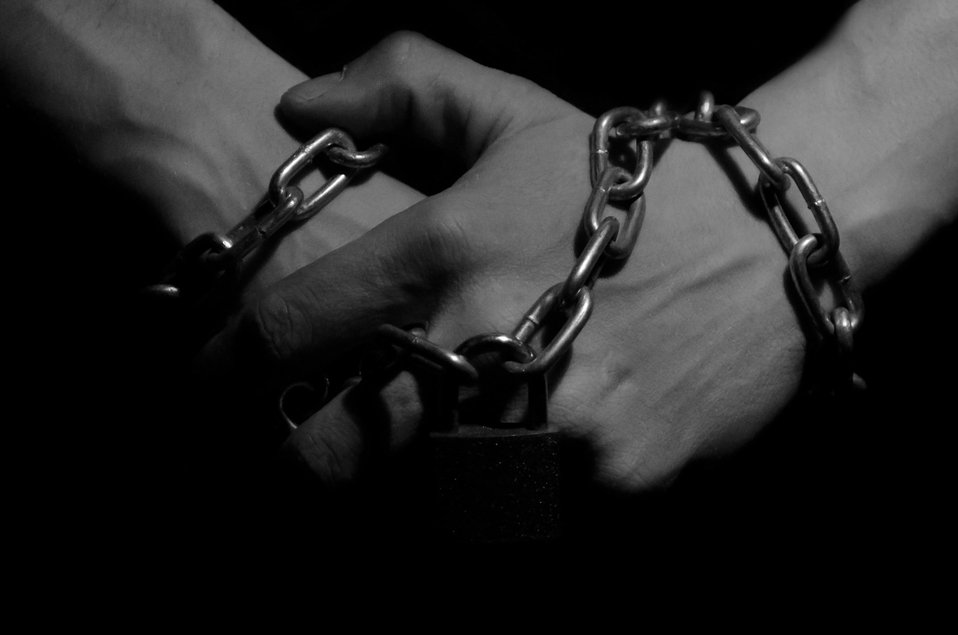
Hands in chains - black and white.